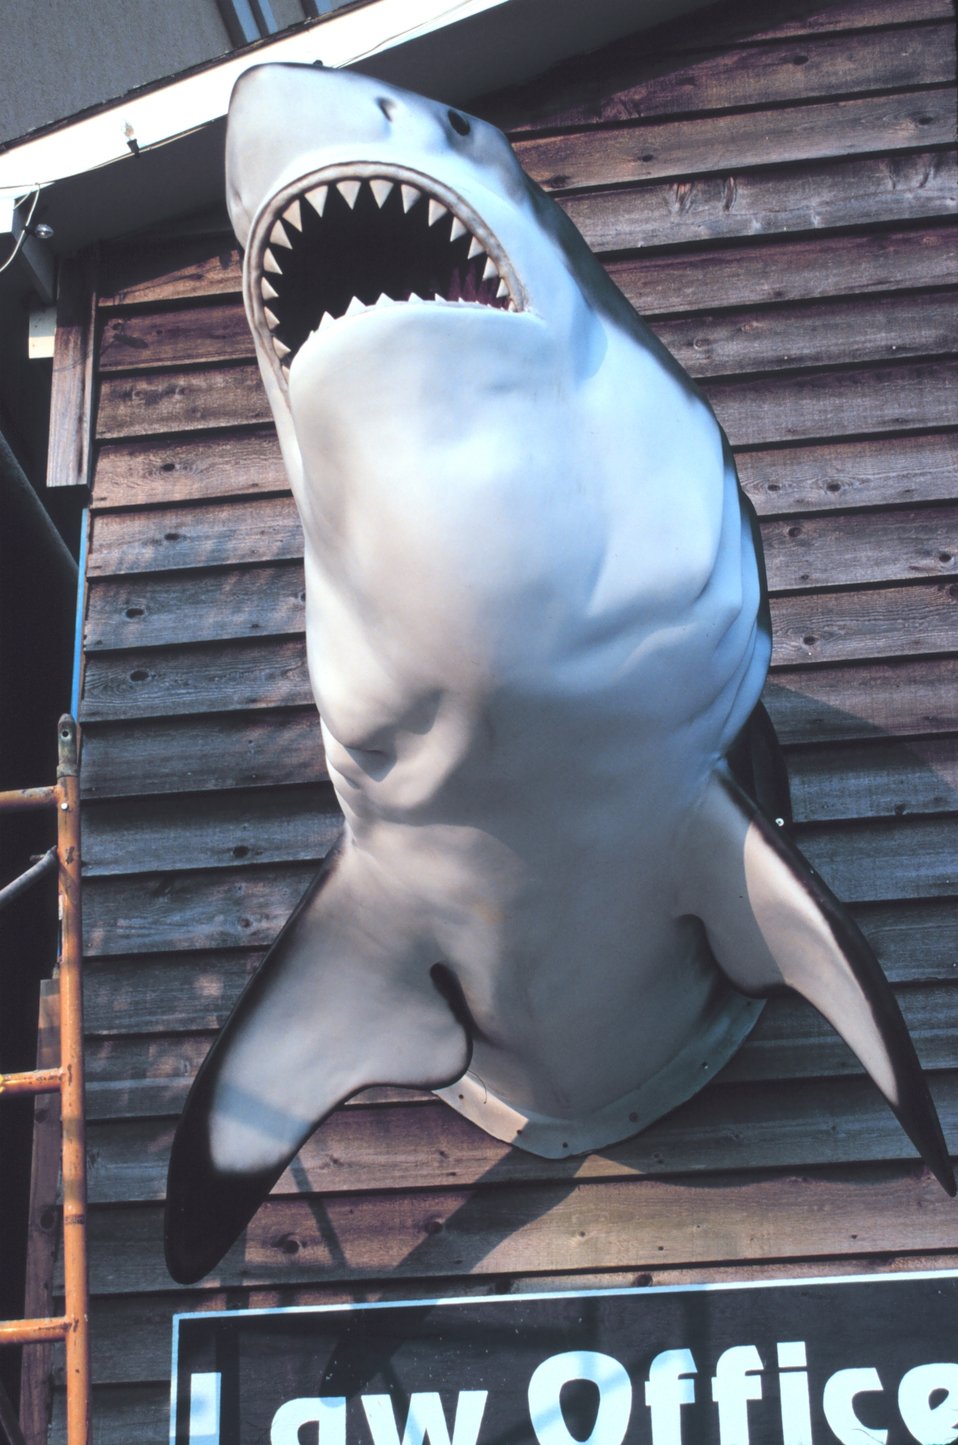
Law office shingle - Either lawyer humor or an avid fisherman